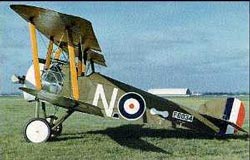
Sopwith Camel

Long before the Sopwith Camel was featured in the comic strip